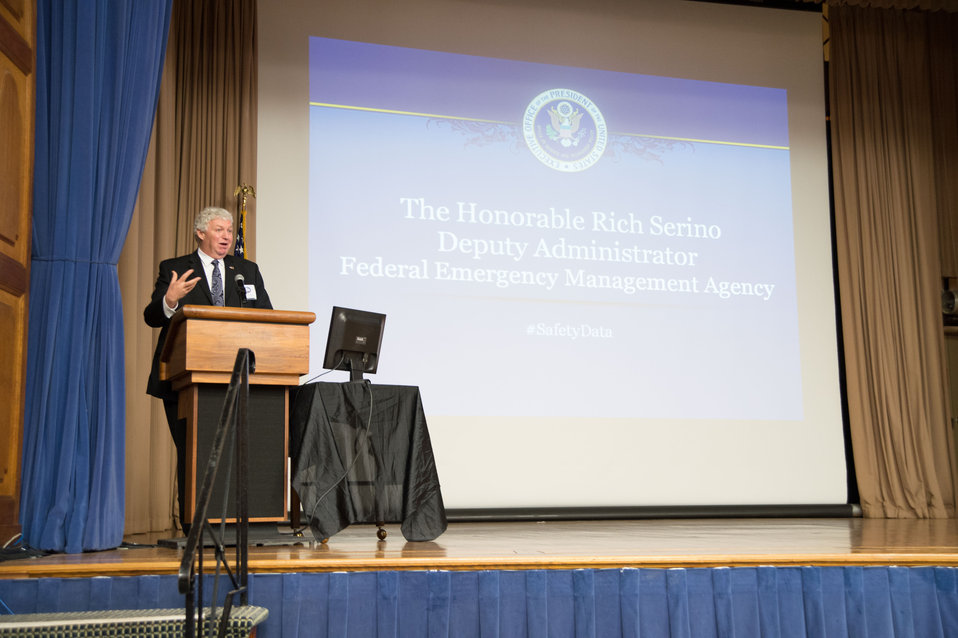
Federal Emergency Management Agency (FEMA) Deputy Administrator Rich Serino speaks at the second annual “Safety Datapalooza,” in the Jefferson Auditorium at USDA in Washington, D.C. on Tuesday, Jan. 14, 2014. The “Safety Datapalooza,” highlights innovators from the private, nonprofit, and academic sectors who have used freely available government data to build products, services, and apps that advance public safety in creative and powerful ways. This year’s meeting features new safety data resources in the areas of transportation, food, occupational and consumer product safety tools to improve disaster preparedness and emergency response.